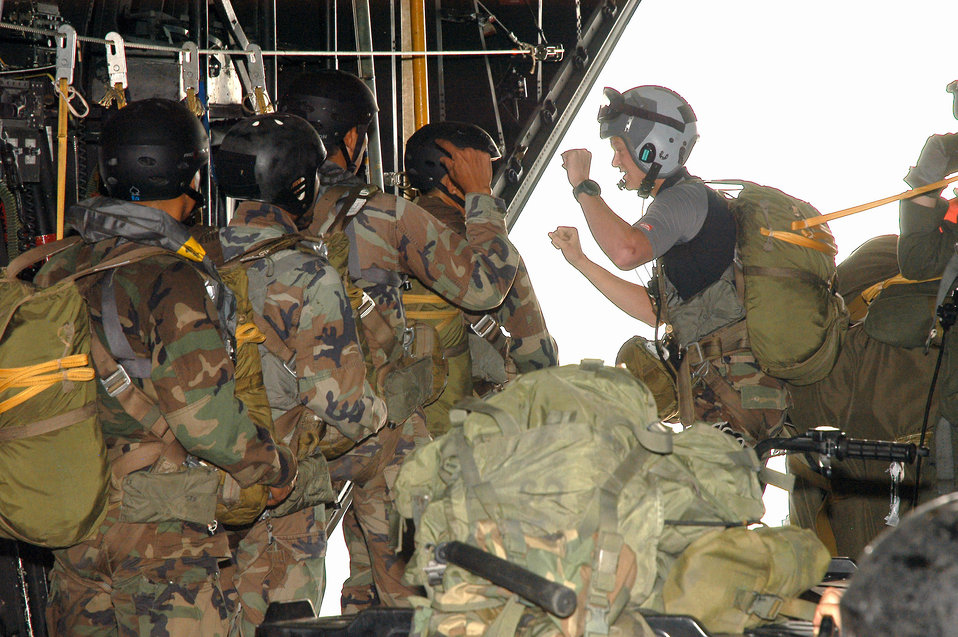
Thais, Americans join forces for Operation Teak Torch training

A combat controller from the 320th Special Tactics Squadron (right) gives the final count for a static line jump of Royal Thai air force special forces aboard an MC-130P Combat Shadow. The American and Thai airmen were participating in Exercise Teak Torch at Udon Thani, Thailand.